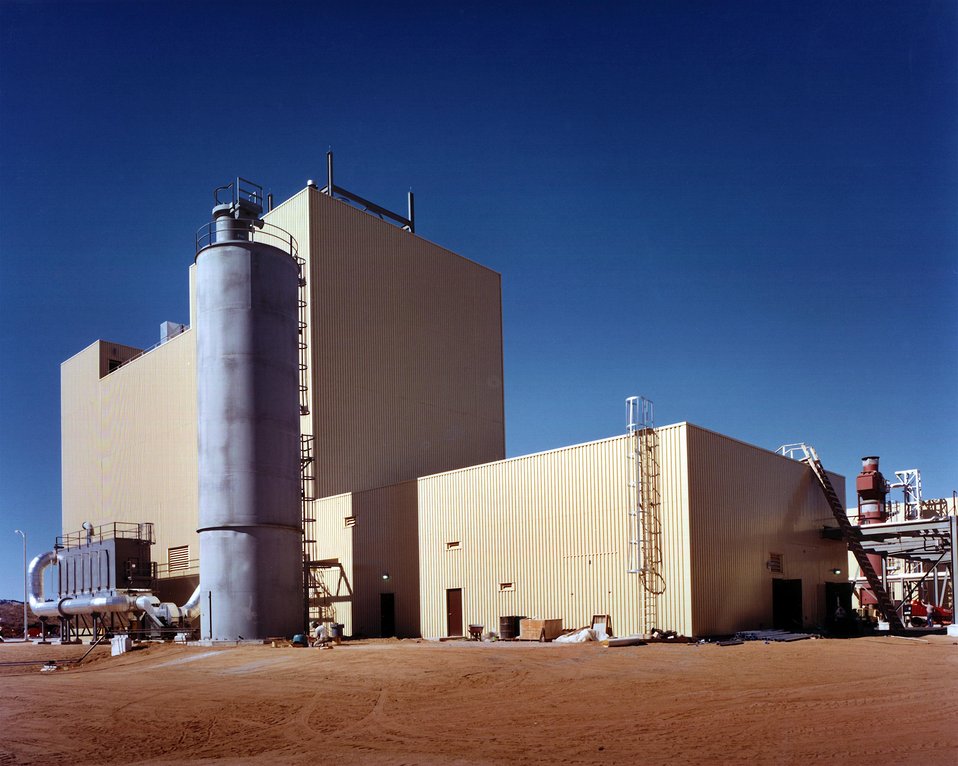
COAL AND SEED PREPARATION AREA.

THE COAL AND SEED PREPARATION BUILDING AND SURROUNDING AREA TAKES RAIL CAR SHIPMENTS OF COAL, SEED, AND FLY ASH MATERIALS. THE COAL IS DRIED, CRUSHED, PULVERIZED, AND TRANS- PORTED TO TEST TRAIN 1B. THE SEED, POTASSIUM CARBONATE, IS MORE EASILY IONIZED AND AIDS THE ELECTRICAL CONDUCTIVITY OF THE PLASMA. THE FLY ASH IS USED IN THE A1C COMBUSTOR TEST TRAIN 1B TO SIMULATE THE EFFECTS OF SLAG AND ASH RESULTING FROM USE OF THE COAL COMBUSTOR (CENTER) SEED STORAGE TANK.